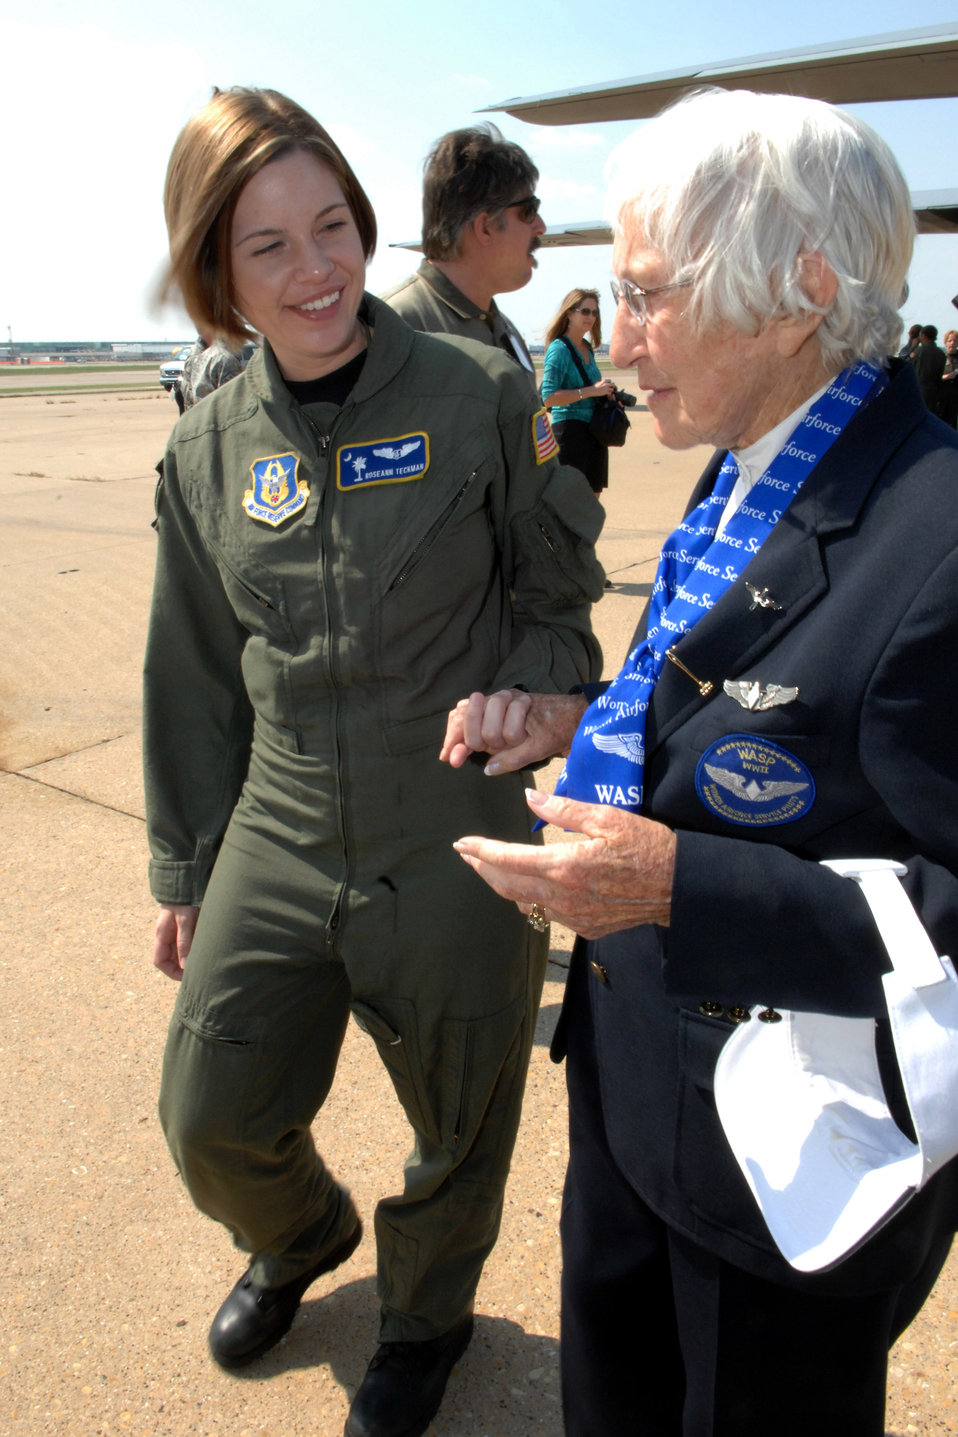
World War II women aviators gather for final reunion

Capt. Roseanne Teckman escorts an original member of the Women Airforce Service Pilots from World War II during the WASP's final flight on a C-130 Hercules Sept. 25 at Irving, Texas. Captain Teckman is a flight nurse with the 315th Airlift Wing from Charleston Air Force Base, S.C.